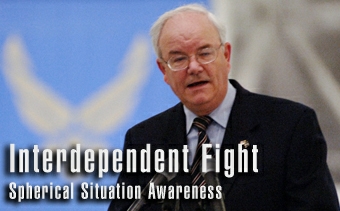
Secretary of the Air Force Michael W. Wynne

Secretary focuses on interdependence